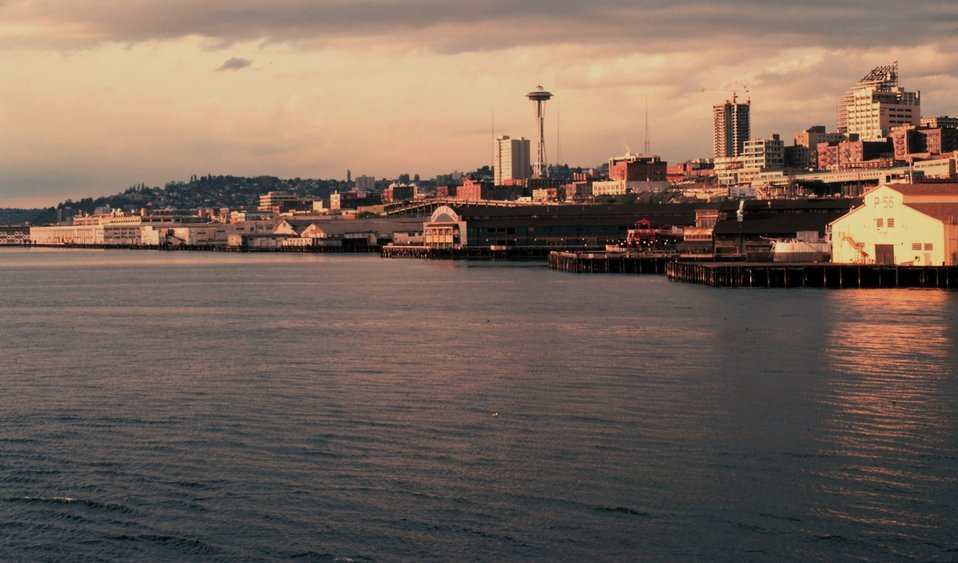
The Seattle skyline from the waterfront.